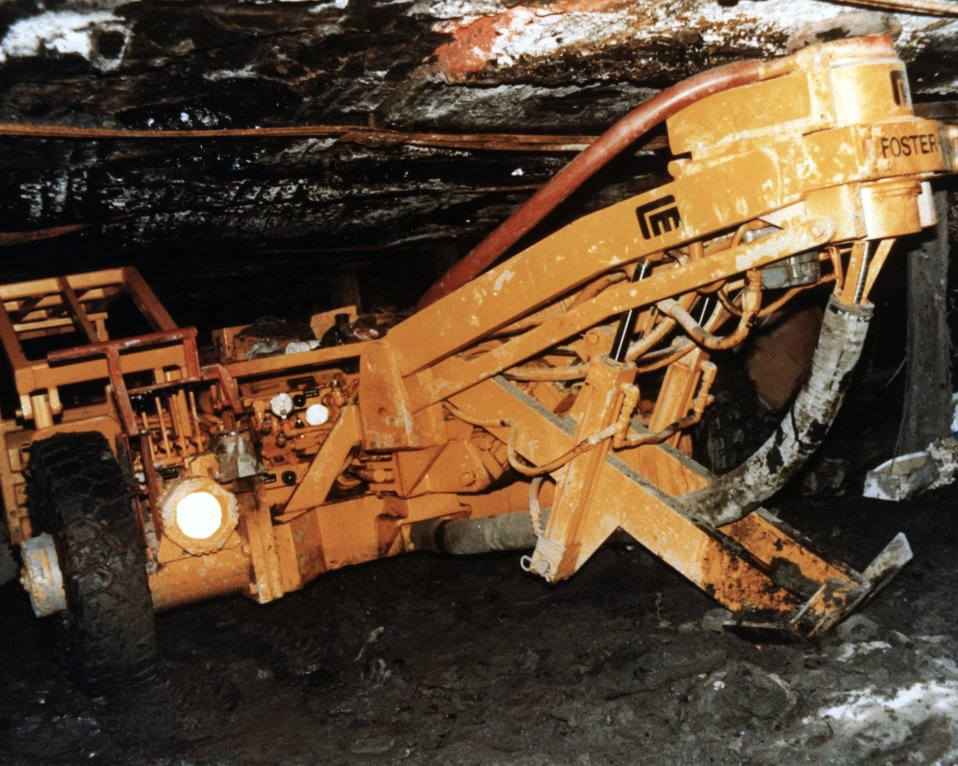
FRONT VIEW OF ROOF DRILL WITHOUT OPERATOR (UNDERGROUND).

THE PREDOMINANT UNDERGROUND MINING METHOD IN THE U.S. IS THE 'ROOM AND PILLAR' METHOD, A TERM DERIVED FROM THE MINING PATTERN OF A SERIES OF EXCAVATED AREAS (ROOMS) AND UNEXCAVATED AREAS (PILLARS) WHICH ARE LEFT TO SUPPORT THE ROOF. A MAJOR INCREASE IN PRODUCTION AND EFFICIENCY COULD BE ACHIEVED BY INTEGRATING THE ROOF SUPPORT AND EXTRACTION FUNCTION.